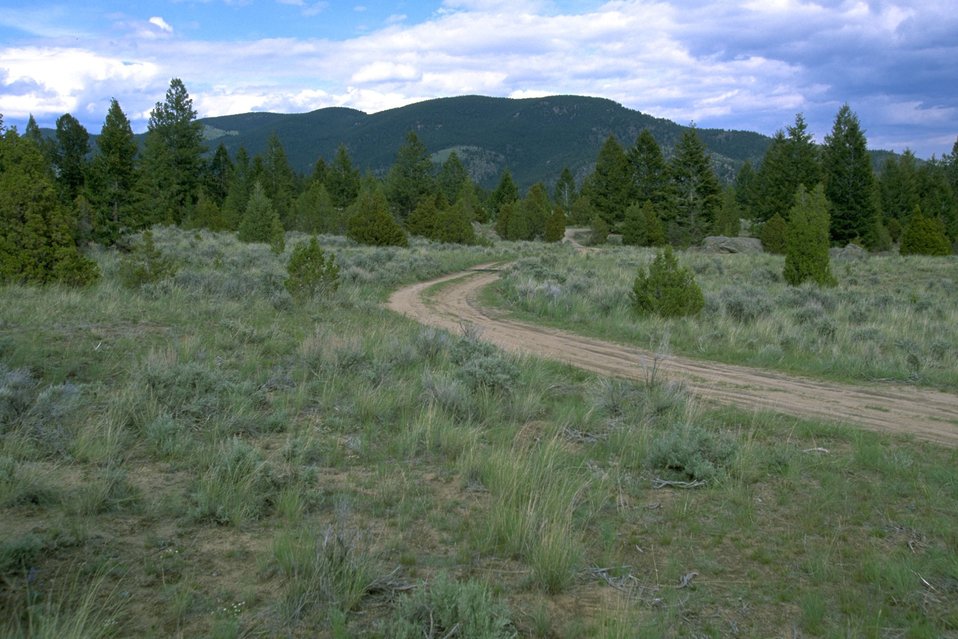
Road in the Pipestone Hills